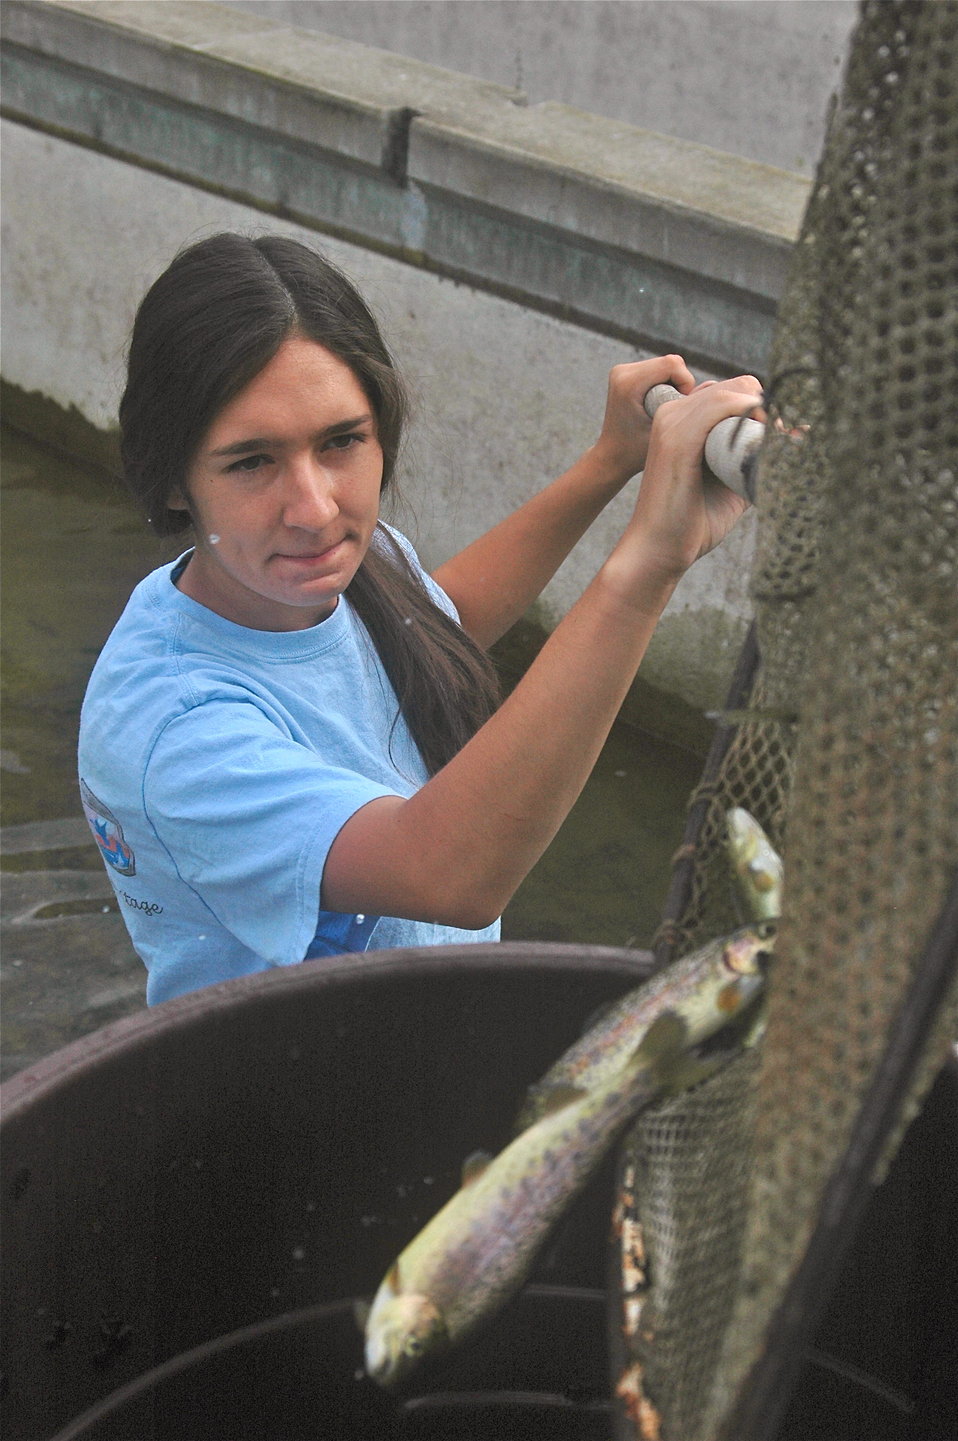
Week 8, Final Week, Creston National Fish Hatchery, Creston, MT

The final week of the 2011 NW Montana Native YCC program. LaGlen Mitchell helps move trout out of one of the raceways at Creston National Fish Hatchery.

Credit: USFWS

Photo Contest Entry #190